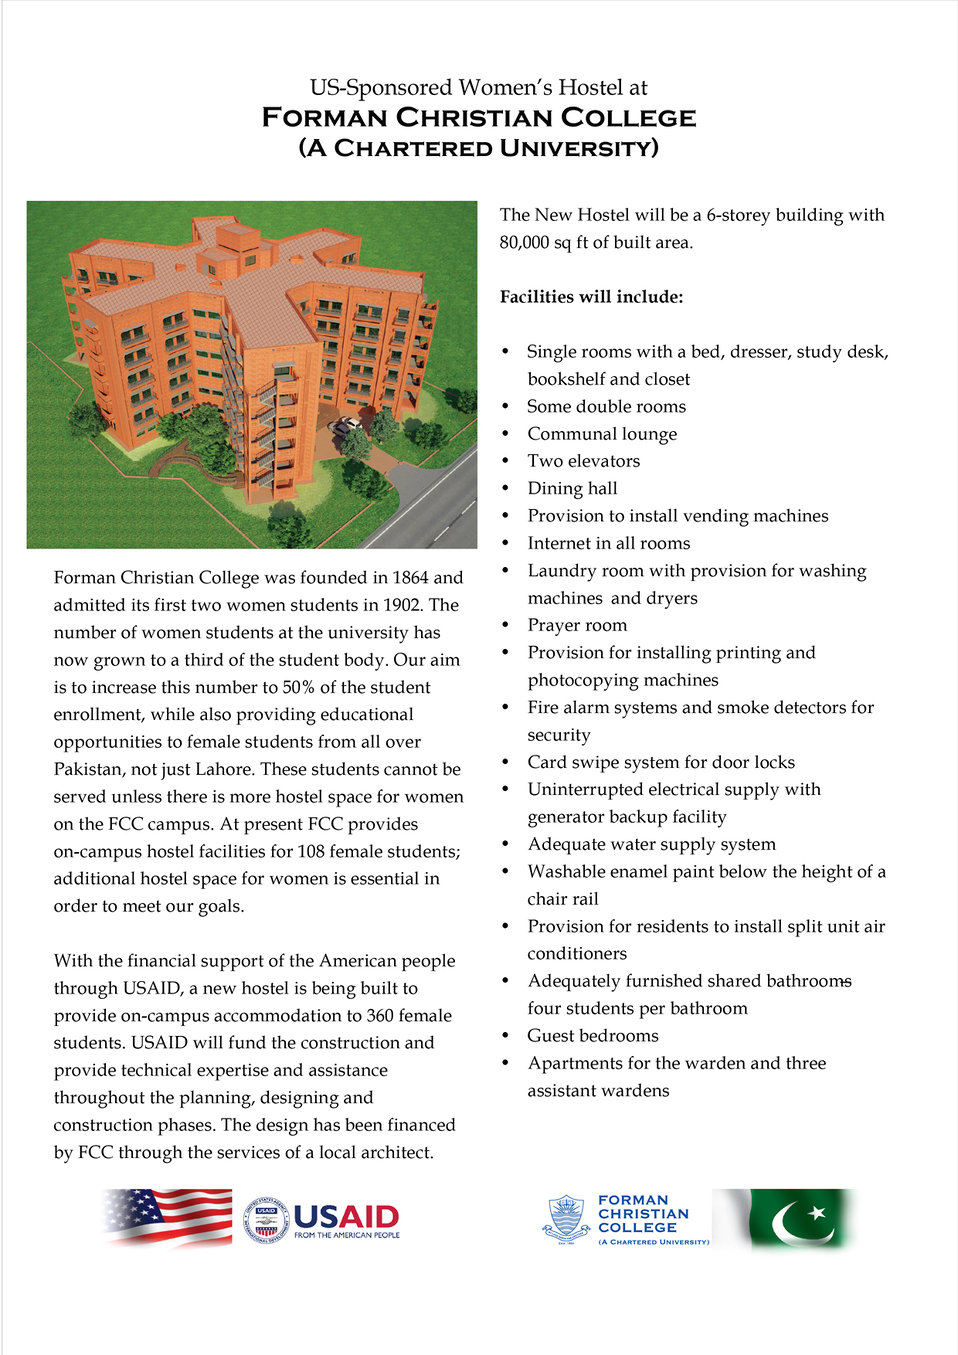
Groundbreaking ceremony for the USAID-funded women's hostel at Forman Christian College

Lahore May 29, 2012: U.S. Agency for International Development (USAID) Mission Director
Dr. Andrew Sisson and U.S. Consul General Nina Fite led the groundbreaking ceremony at the
new USAID-funded Women’s Hostel at Forman Christian College (FCC).